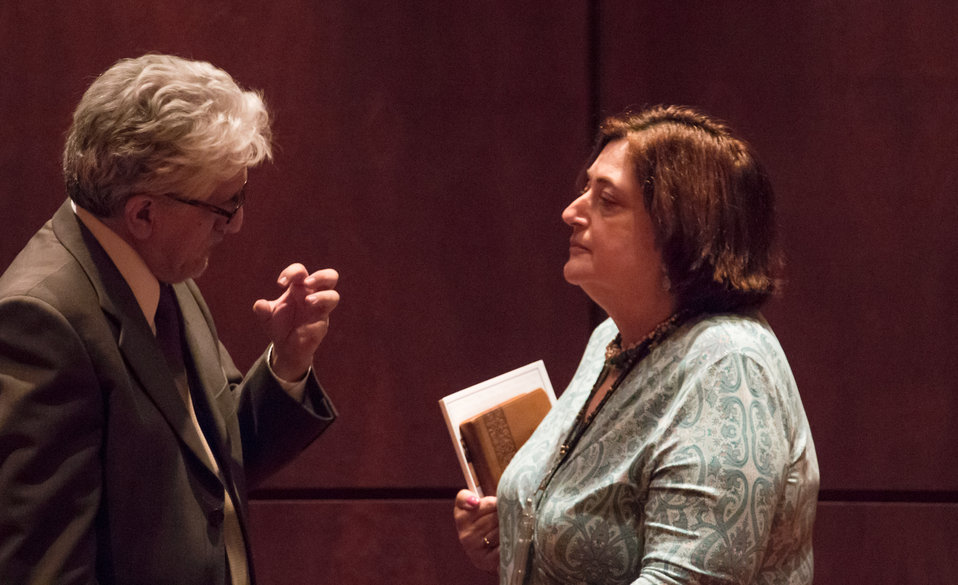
VHAP Launch (393 of 511)